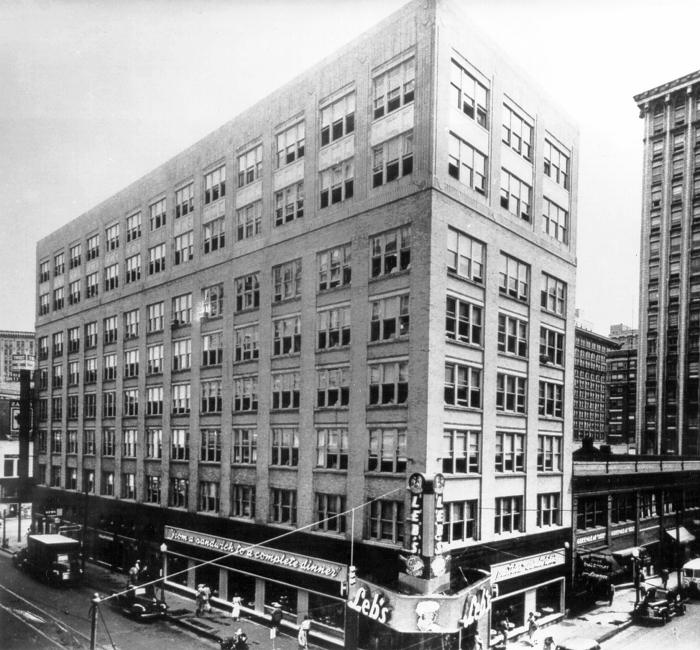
This image depicts the former Communicable Disease Building in downtown Atlanta positioned above the historic Leb's restaurant.